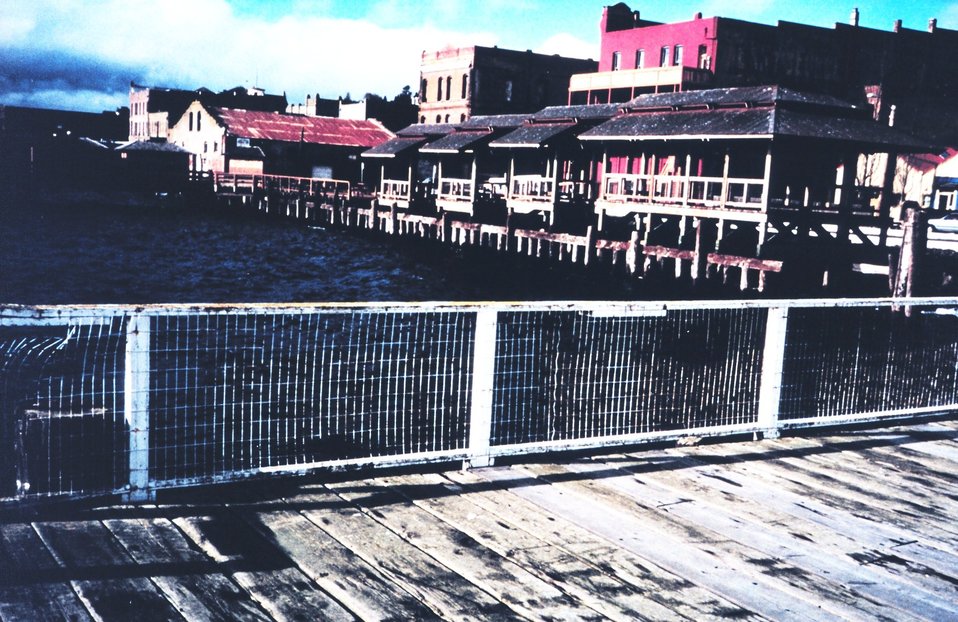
The waterfront at Port Townsend